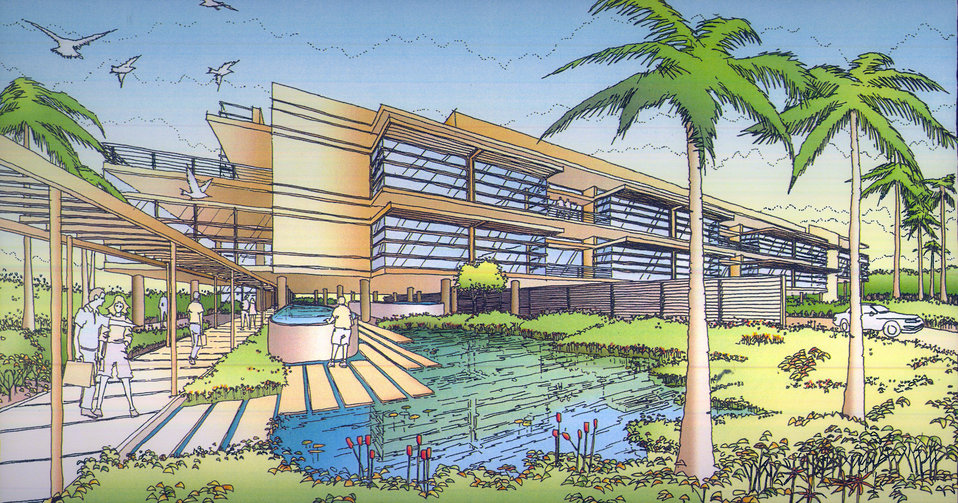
Marine Technology and Life Sciences Seawater Research Building

The new SUSTAIN facility to study the physics and dynamics of hurricanes and their impact on coastal structures will be part of this planned Marine Technology and Life Sciences Seawater Research Building at the University of Miami's Rosenstiel School of Marine and Atmospheric Science, Miami, Florida.

Artist rendering of planned building courtesy University of Miami.